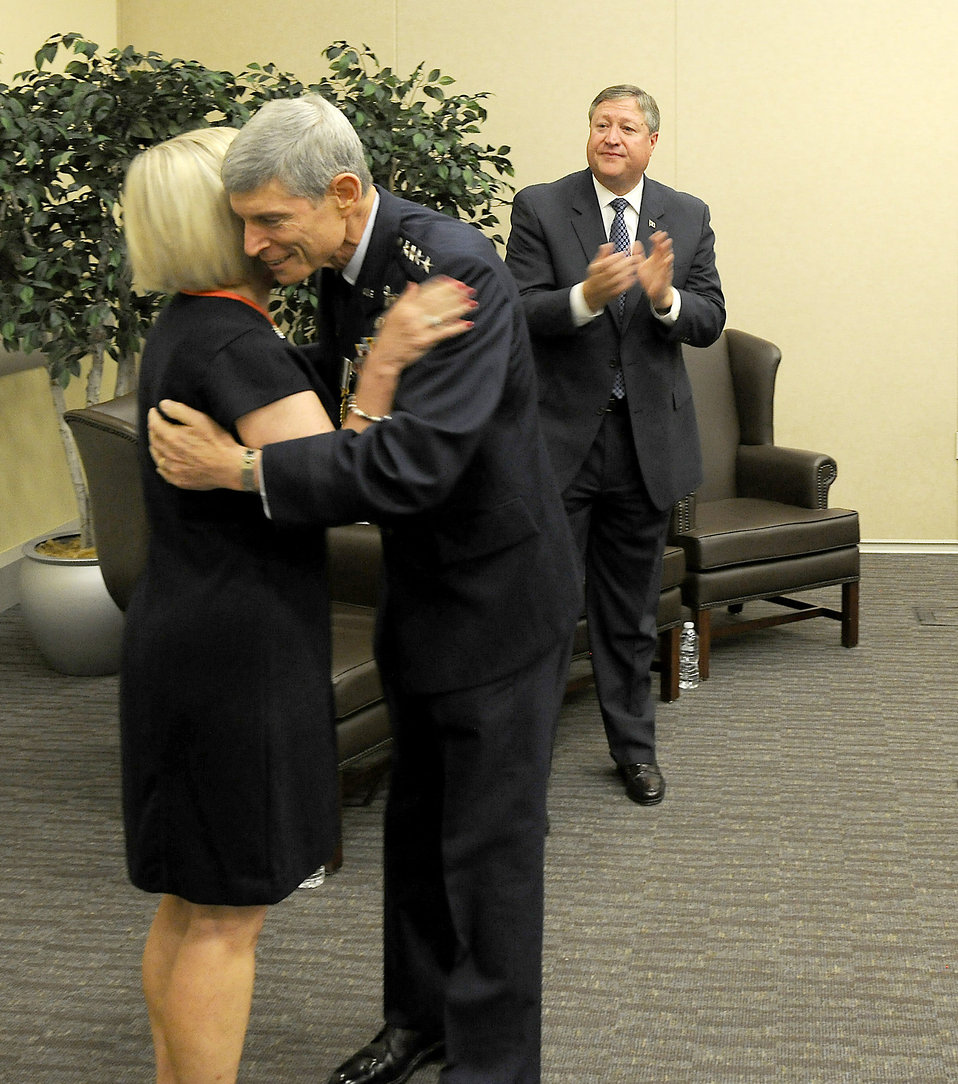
CSAF, spouse recognized for distinguished service

Air Force Chief of Staff Gen. Norton Schwartz embraces his wife Suzie during a ceremony at Joint Base Andrews, Md., Aug. 9, 2012. Secretary of the Air Force Michael Donley recognized the two for their years of service to the Air Force and the nation.